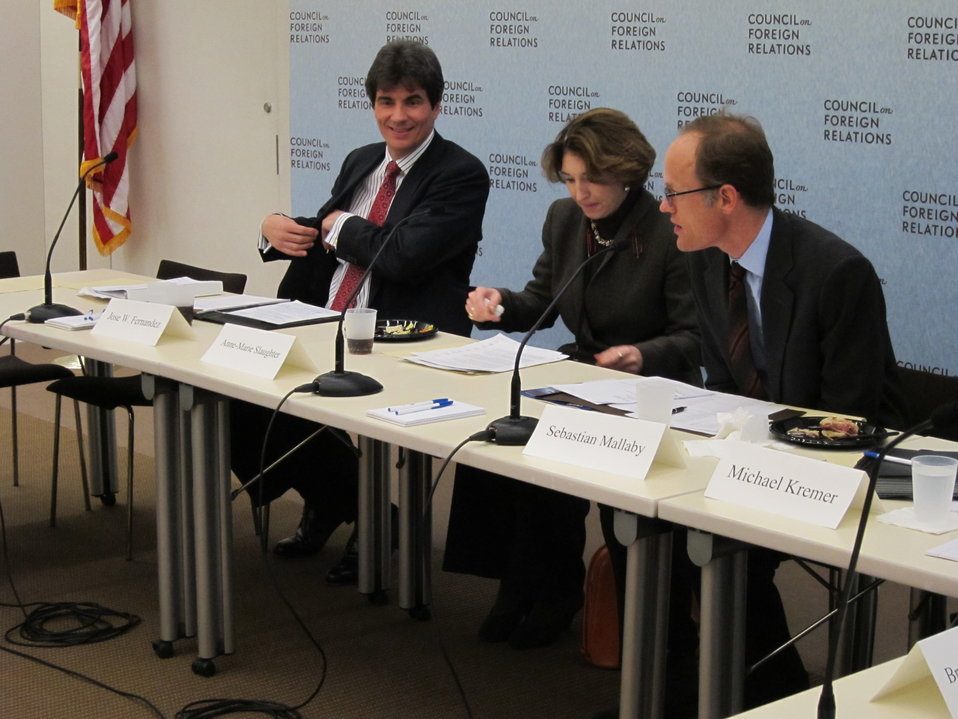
Assistant Secretary Fernandez Participates in a Roundtable Discussion

Assistant Secretary of State for Economic, Energy and Business Affairs Jose Fernandez participates in a roundtable discussion at the Council on Foreign Relations (CFR) in Washington, D.C., on January 12, 2011.